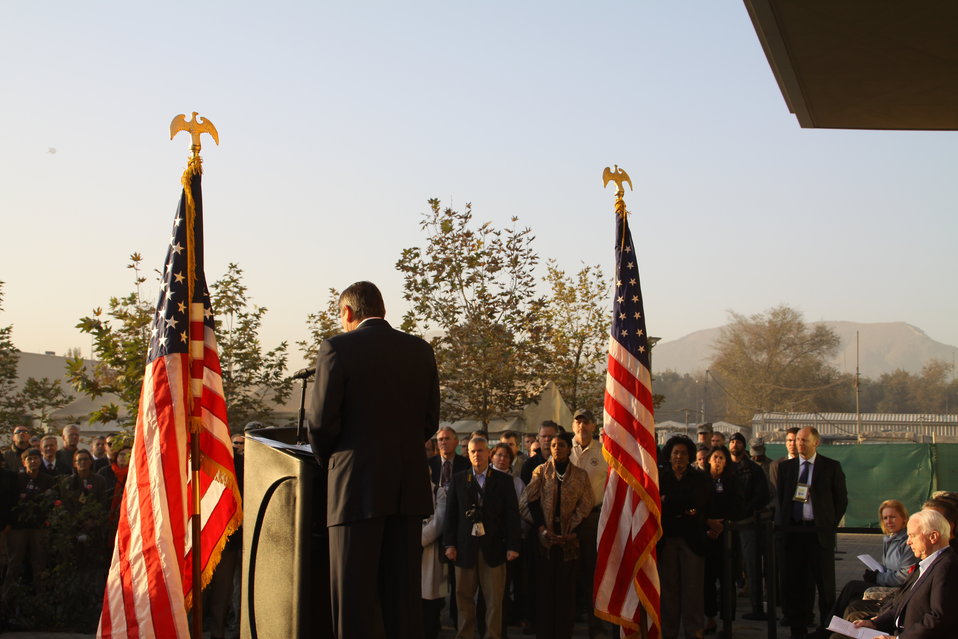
Ambassador Eikenberry